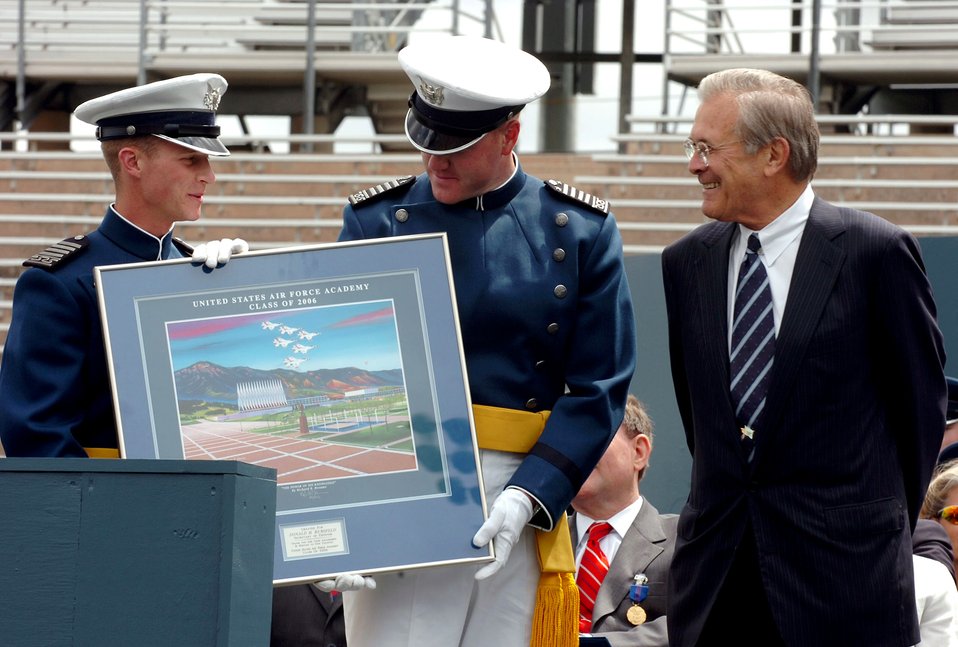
Rumsfeld voices confidence in academy graduating class

Secretary of Defense Donald H. Rumsfeld is presented a gift after delivering the commencement address to the 2006 graduating class of the U.S. Air Force Academy in Colorado Springs, Colo., on Wednesday, May 31, 2006.